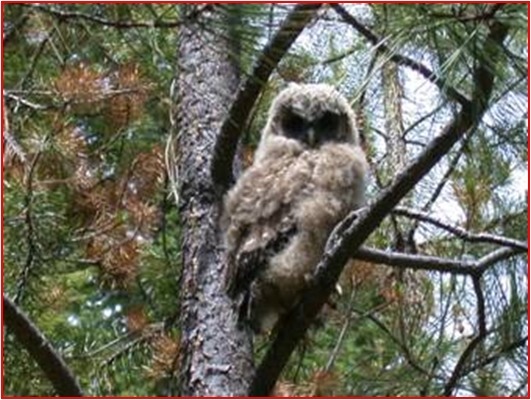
Juvenile Spotted Owl